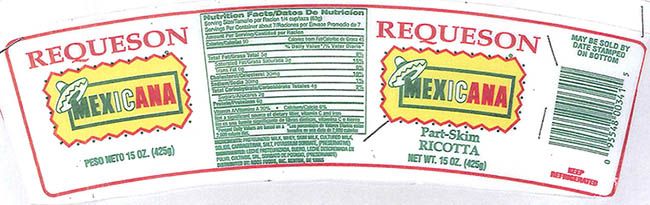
RECALLED – Variety of cheeses

February 25, 2014 – Product Recall – EXPANDED - Roos Foods Voluntarily Recalls Variety of Cheeses (listed below) Due to Possible Health Risk.